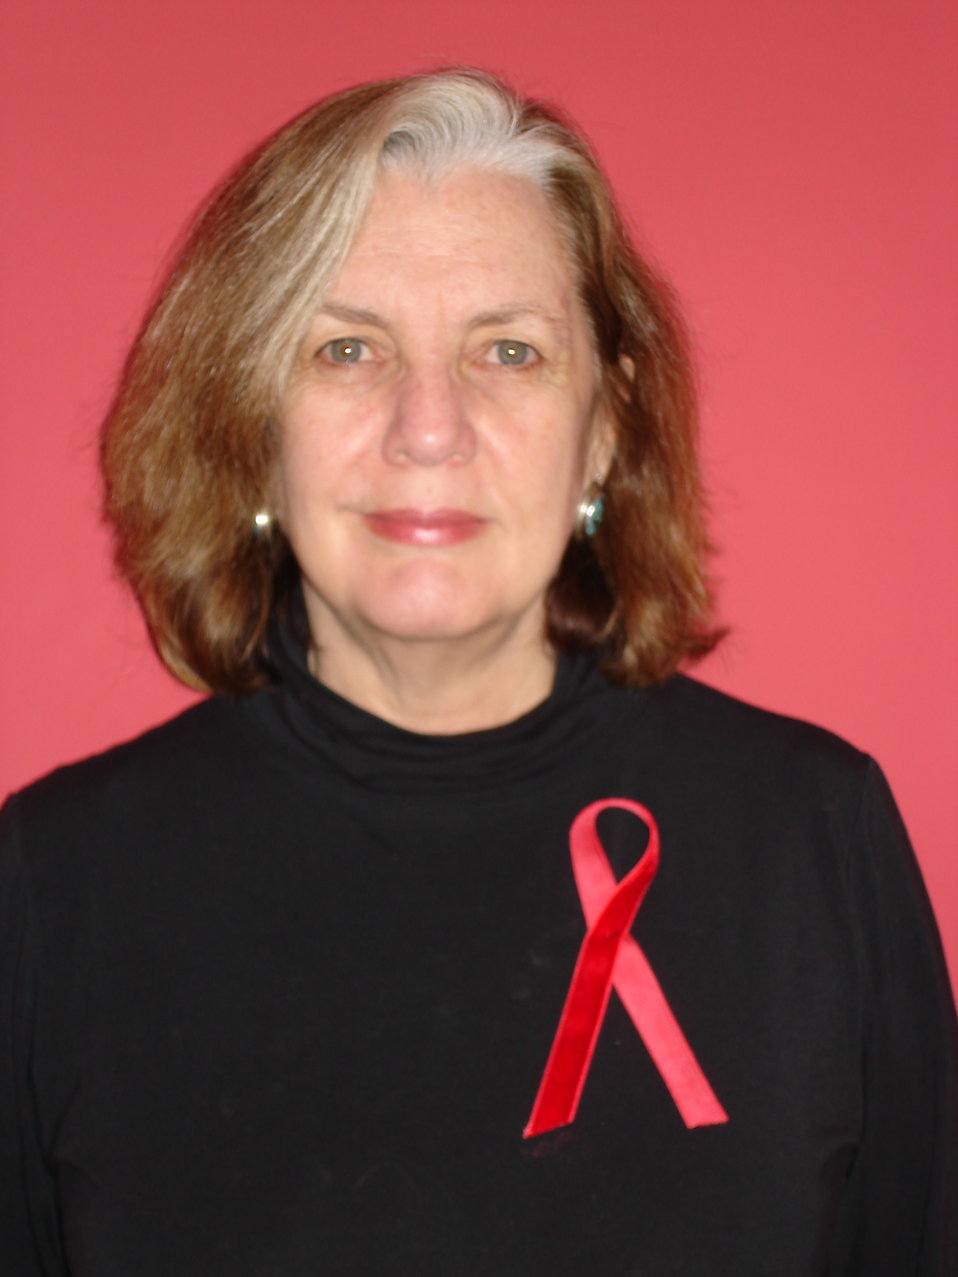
kof